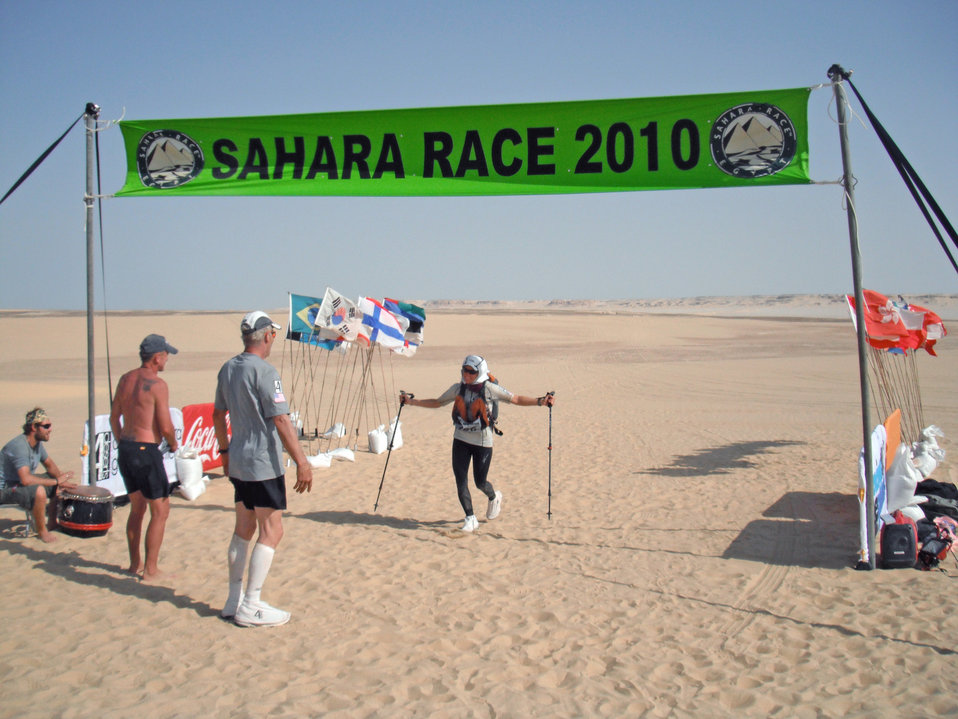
Capt. Zederkof

Capt. Carrie Zederkof crosses the finish line as she completes the 155-mile Sahara Race Oct. 9, 2010, at the Great Pyramids of Giza, Egypt. Captain Zederkof was the seventh female and the 39th person out of 156 to cross the finish line. Captain Zederkof is a 533rd Training Squadron space-based infrared system mission instructor at Vandenberg Air Force Base, Calif.